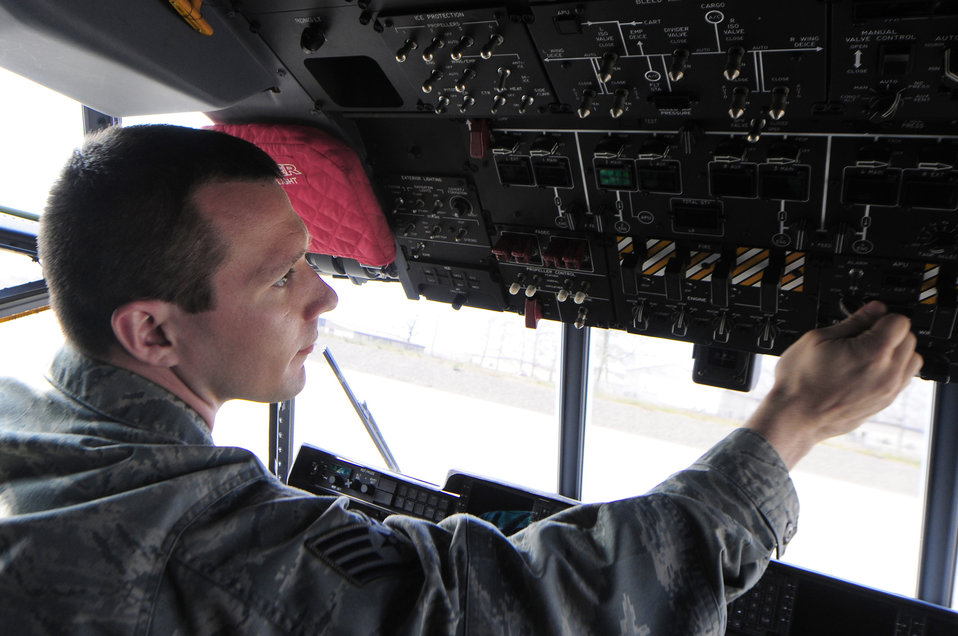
Airmen support Odyssey Dawn

Staff Sgt. Michael Moomaw performs a post-flight inspection on a C-130J Super Hercules March 25, 2011, at Ramstein Air Base, Germany, after its return from a mission in support of Operation Odyssey Dawn. Moomaw is assigned to the 86th Aircraft Maintenance Squadron.